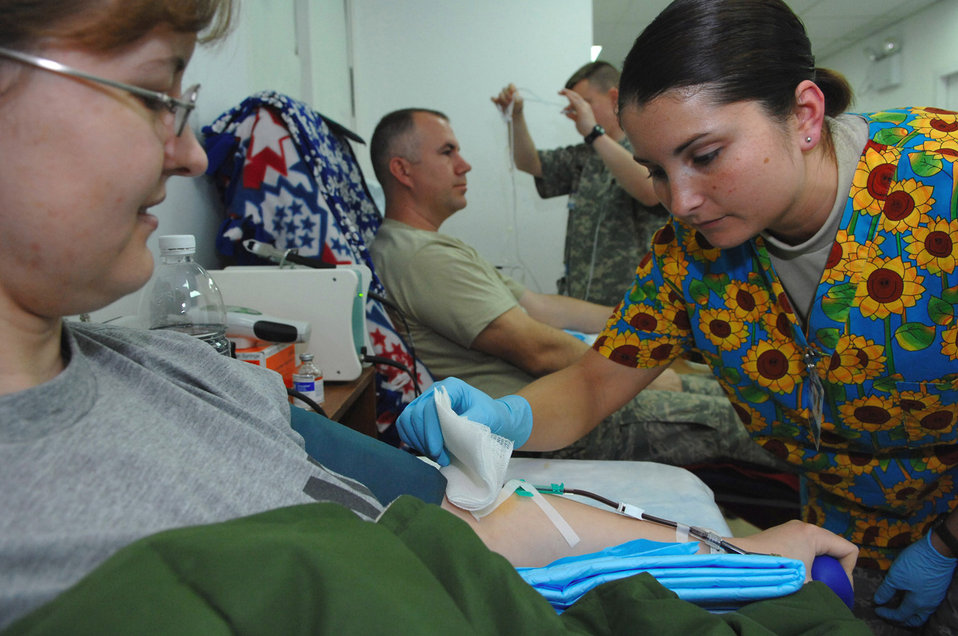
Providing safer blood products faster to wounded warriors

Staff Sgt. Amanda Winders checks on the platelet donation site of Army Capt. Susan Hawley to ensure the captain's blood is flowing properly while she donates life-saving blood products Jan. 28 at the Air Force Theater Hospital at Balad Air Base, Iraq. The platelet donation process takes about 90 minutes to complete. Though a time consuming process, many lives are saved by donations. Sergeant Winders is a 332nd Expeditionary Medical Support Squadron lab technician deployed from Wright Patterson Air Force Base, Ohio. Captain Hawley is a 546th Area Support Medical Company doctor deployed from Fort Hood, Texas.